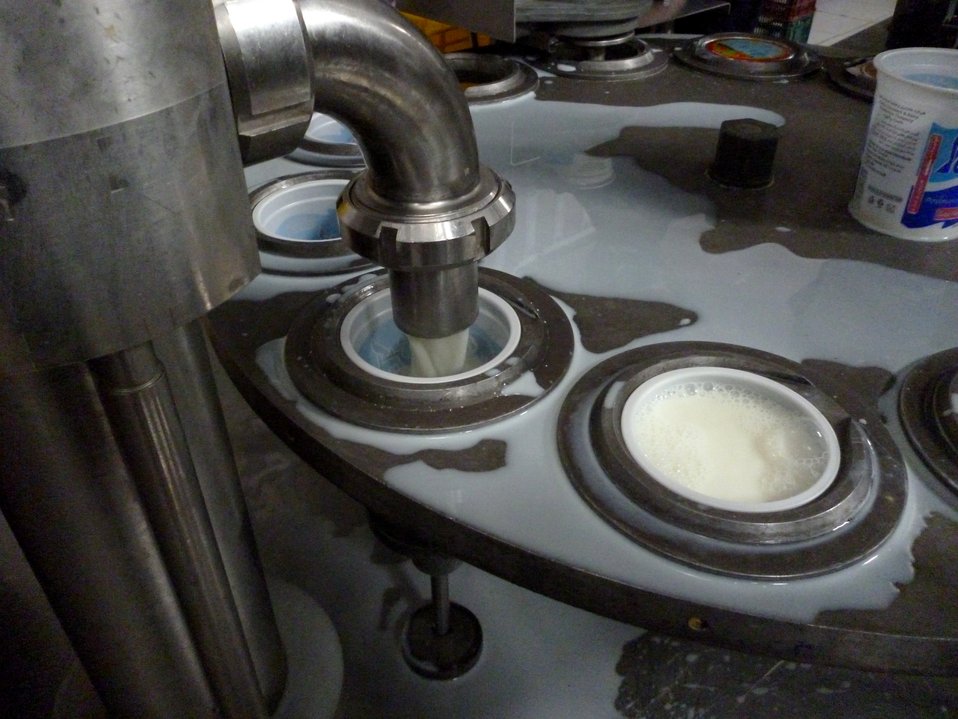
Yogurt cups are filled with a warm yogurt, then quickly sealed and cooled at a dairy processing plant in Mazar.